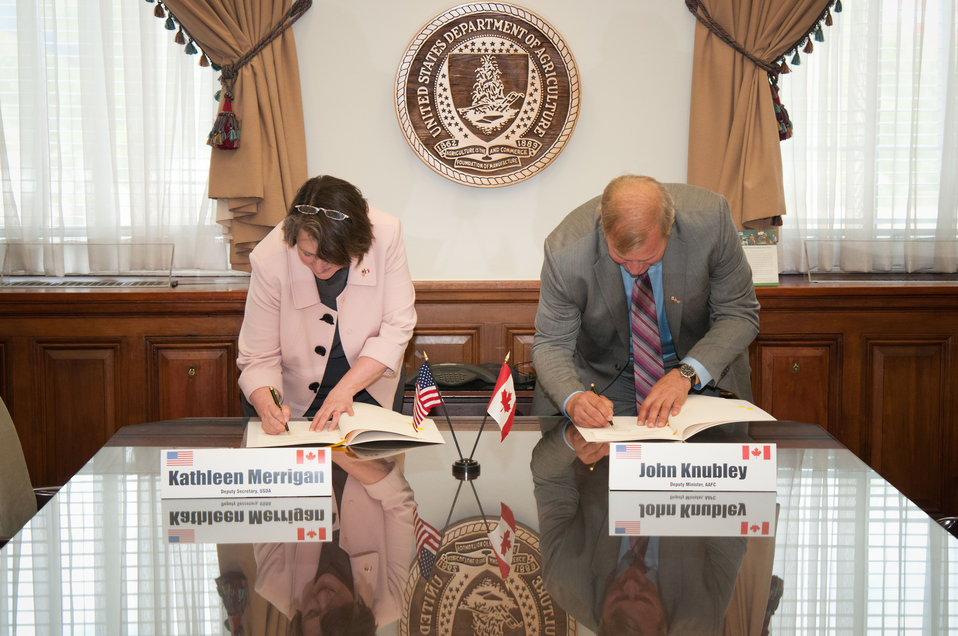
Agriculture Deputy Secretary, Dr. Kathleen Merrigan (left), United States Department of Agriculture and John Knubely (right), Deputy Minister, Canada Agriculture and Agri-Food sign a Memorandum of Understanding verifying enhanced collaboration in Agroforestry between the two nations at the United States Department of Agriculture, on Tuesday, April 17, 2012 in Washington, DC.